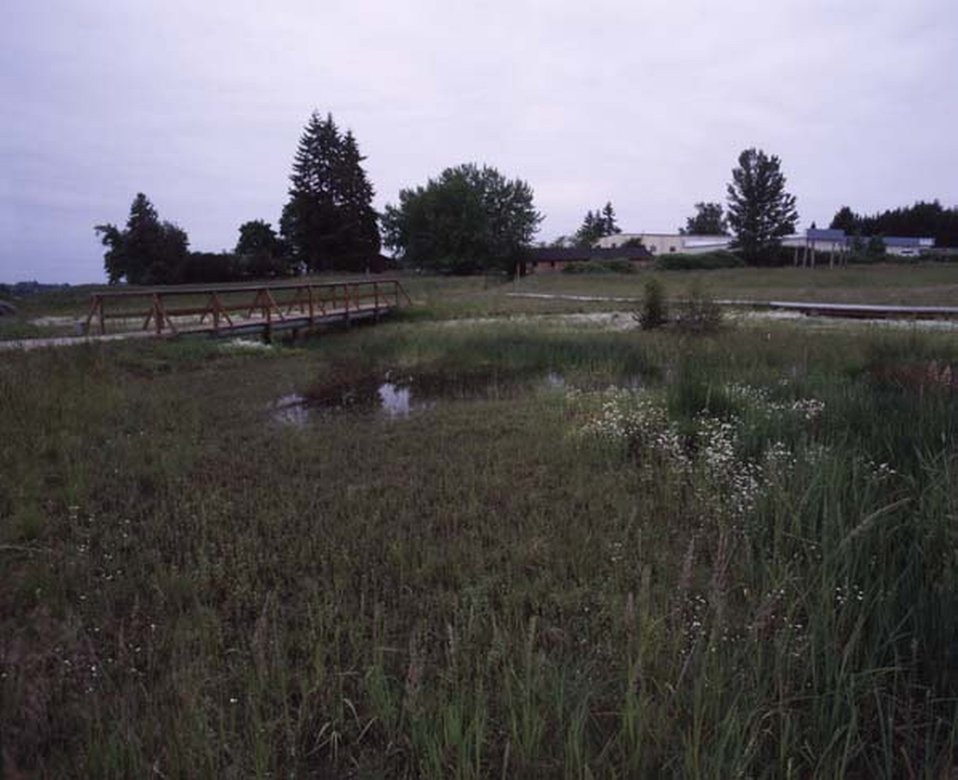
West Eugene Wetlands.